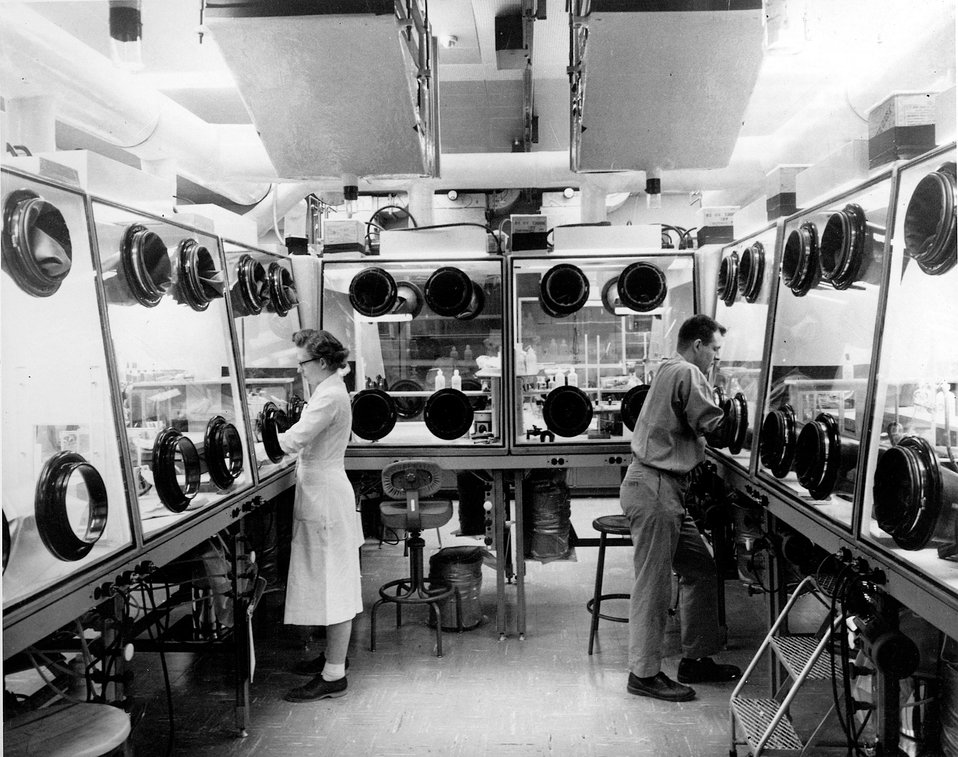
General view of the 'wet chemistry' facilities in a plutonium analysis laboratory operated by the Chemistry Division at Argonne.
c.1965